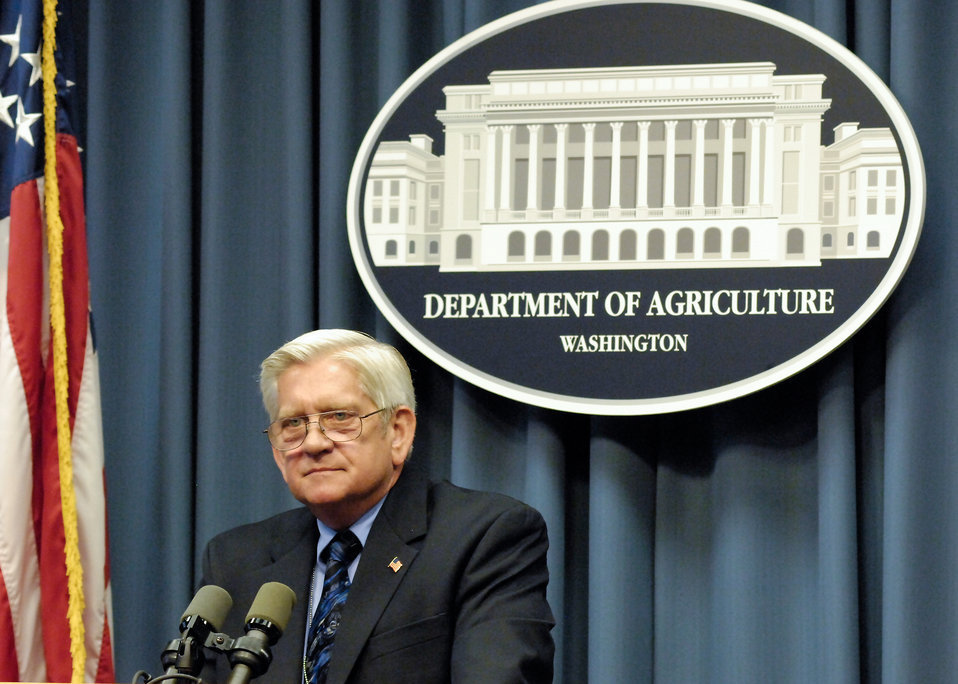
Kerry Gorton, Audio Visual Production Manager, USDA Administrative Operations advises students on Utilizing Media Tools and Public Speaking at the USDA HACU and 1994 Tribal College Summer Internship Orientation Program in Washington, DC, Monday, June 7, 2010. USDA Photo 10di1390-36.